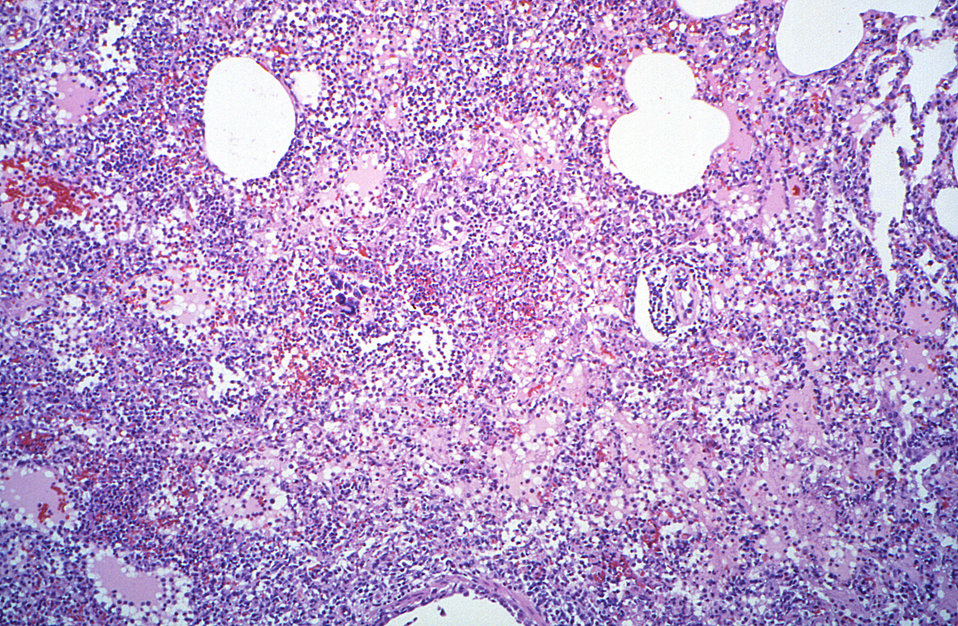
This H&E-stained photomicrograph of an unknown animal lung tissue specimen, revealed some of the cytoarchitectural histopathologic changes associated with a Nipah virus infection.